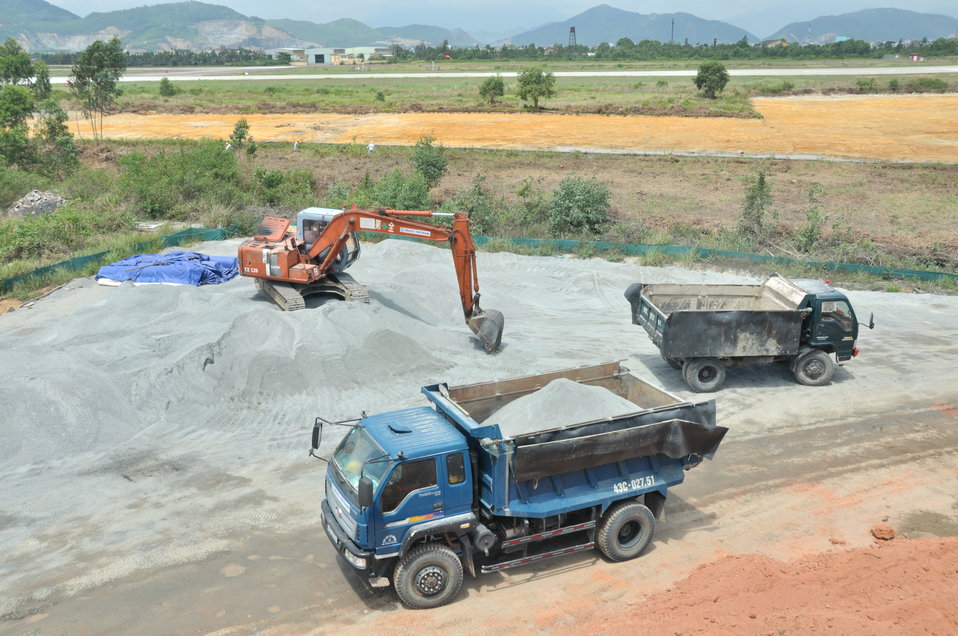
Site construction at the Environmental Remediation of Dioxin Contamination at Danang Airport

Progress at the Danang Airport remediation site
April 23, 2013